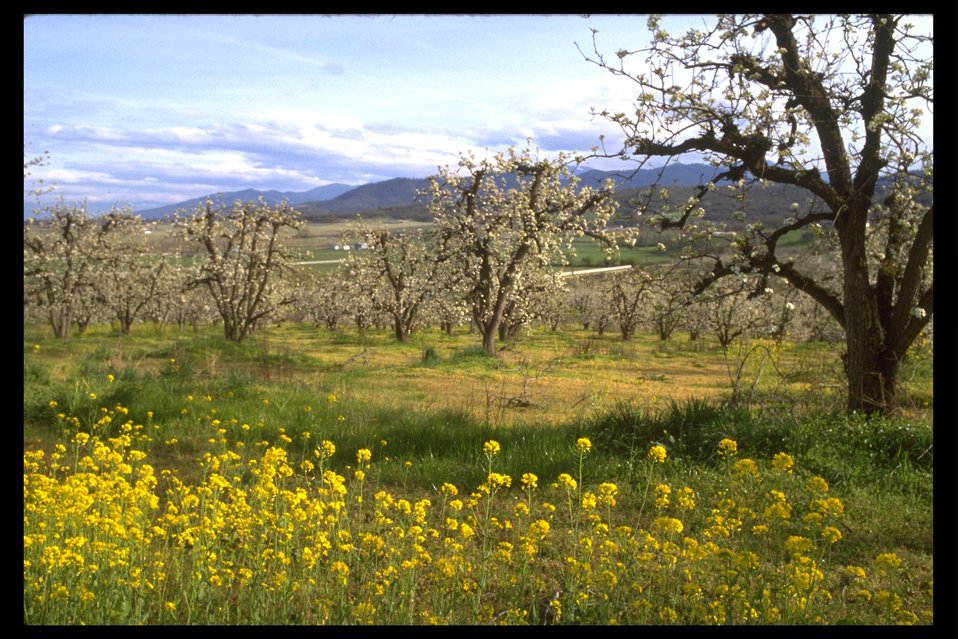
Meadow on Antioch Road in Sam's Valley showing Western Buttercup and the White Oak.